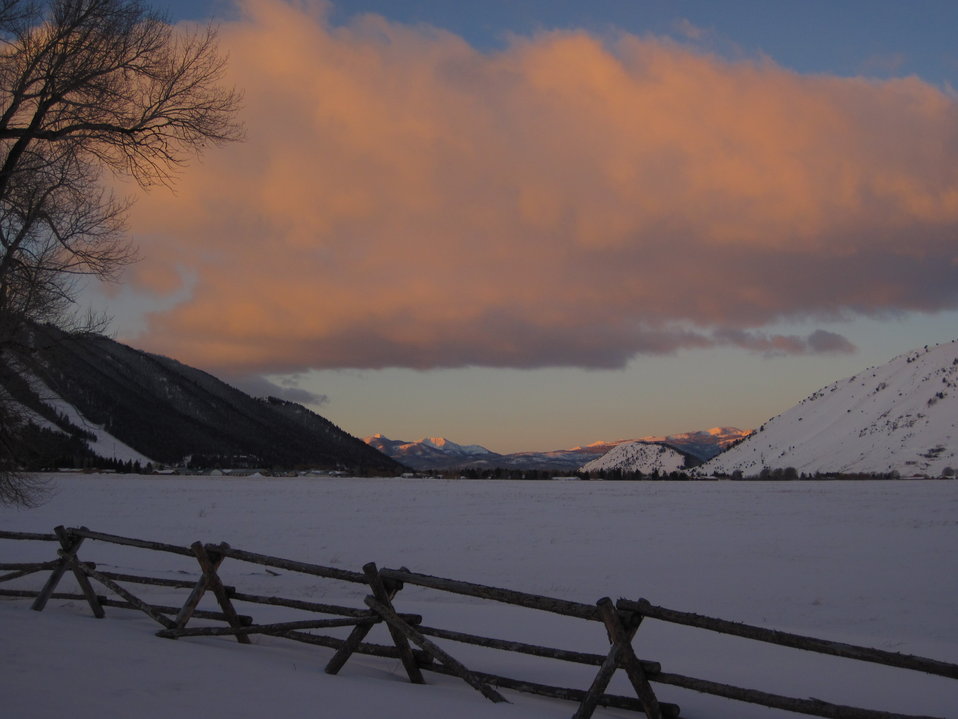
Sunset from the Miller Ranch

An evening view to the southwest of the historic Miller House on the National Elk Refuge.

Two runs on Jackson's town ski area, Snow King, can be seen on the left of the photo.

Credit: USFWS / Tony Hough, refuge volunteer